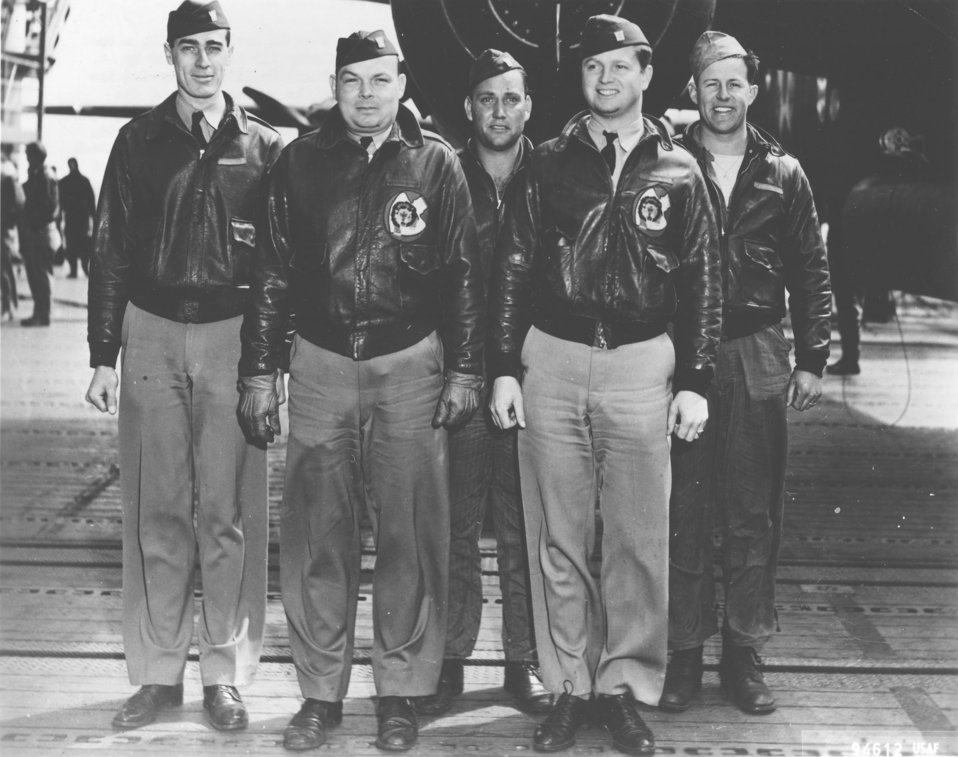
Doolittle Tokyo Raiders, Crew No. 13

Crew No. 13 (Plane #40-2247, target Yokosuka): 37th Bombardment Squadron, front row: Lt. Edgar E. McElroy, pilot; and Lt. Richard A. Knobloch, copilot; back row: Lt. Clayton J. Campbell, navigator; Master Sgt. Robert C. Bourgeois, bombardier; and Sgt. Adam R. Williams, flight engineer/gunner.